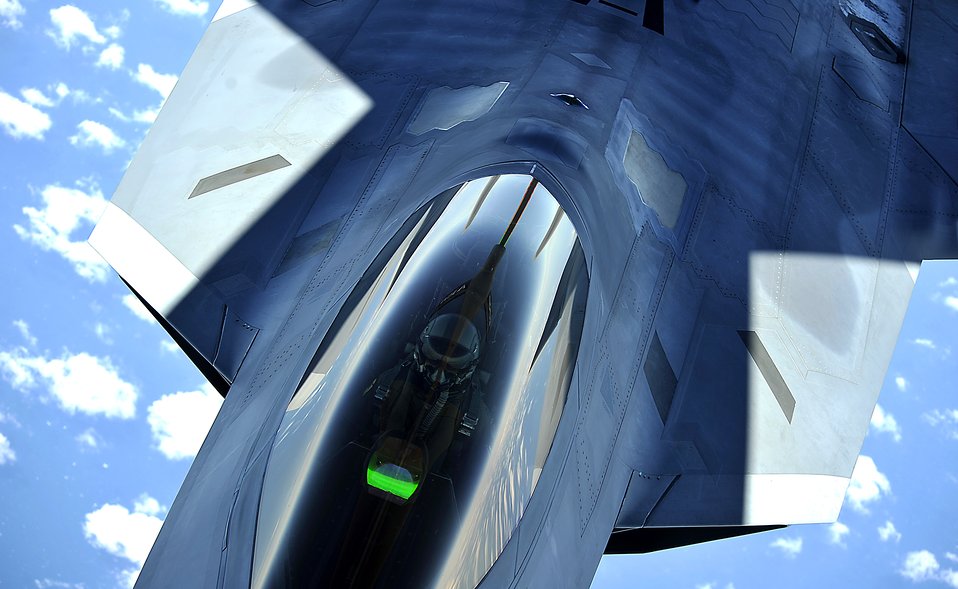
F-22 Raptor

A KC-135 Stratotanker with the 756th Air Refueling Squadron, Joint Base Andrews Naval Air Facility, Md. refuels a 1st Fighter Wing's F-22 Raptor from Joint Base Langley-Eustis, Va. off the east coast on May 10, 2012. The first Raptor assigned to the Wing arrived Jan. 7, 2005. This aircraft was allocated as a trainer, and was docked in a hanger for maintenance personnel to familiarize themselves with its complex systems. The second Raptor, designated for flying operations, arrived Jan. 18, 2005. On Dec. 15, 2005, Air Combat Command commander, along with the 1 FW commander, announced the 27th Fighter Squadron as fully operational capable to fly, fight and win with the F-22. (U.S. Air Force Photo by: Master Sgt. Jeremy Lock)